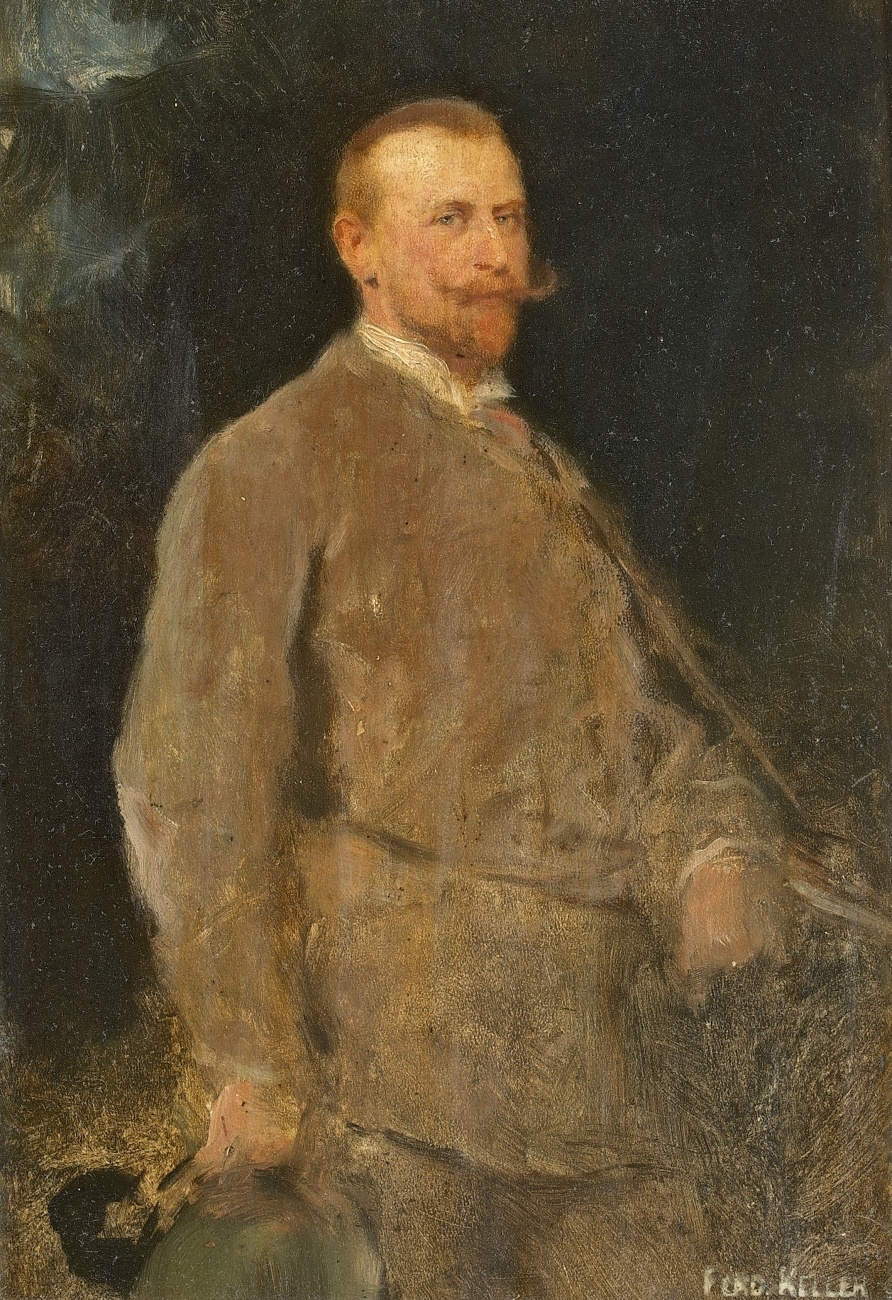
Ferdinand von Keller Der Jäger